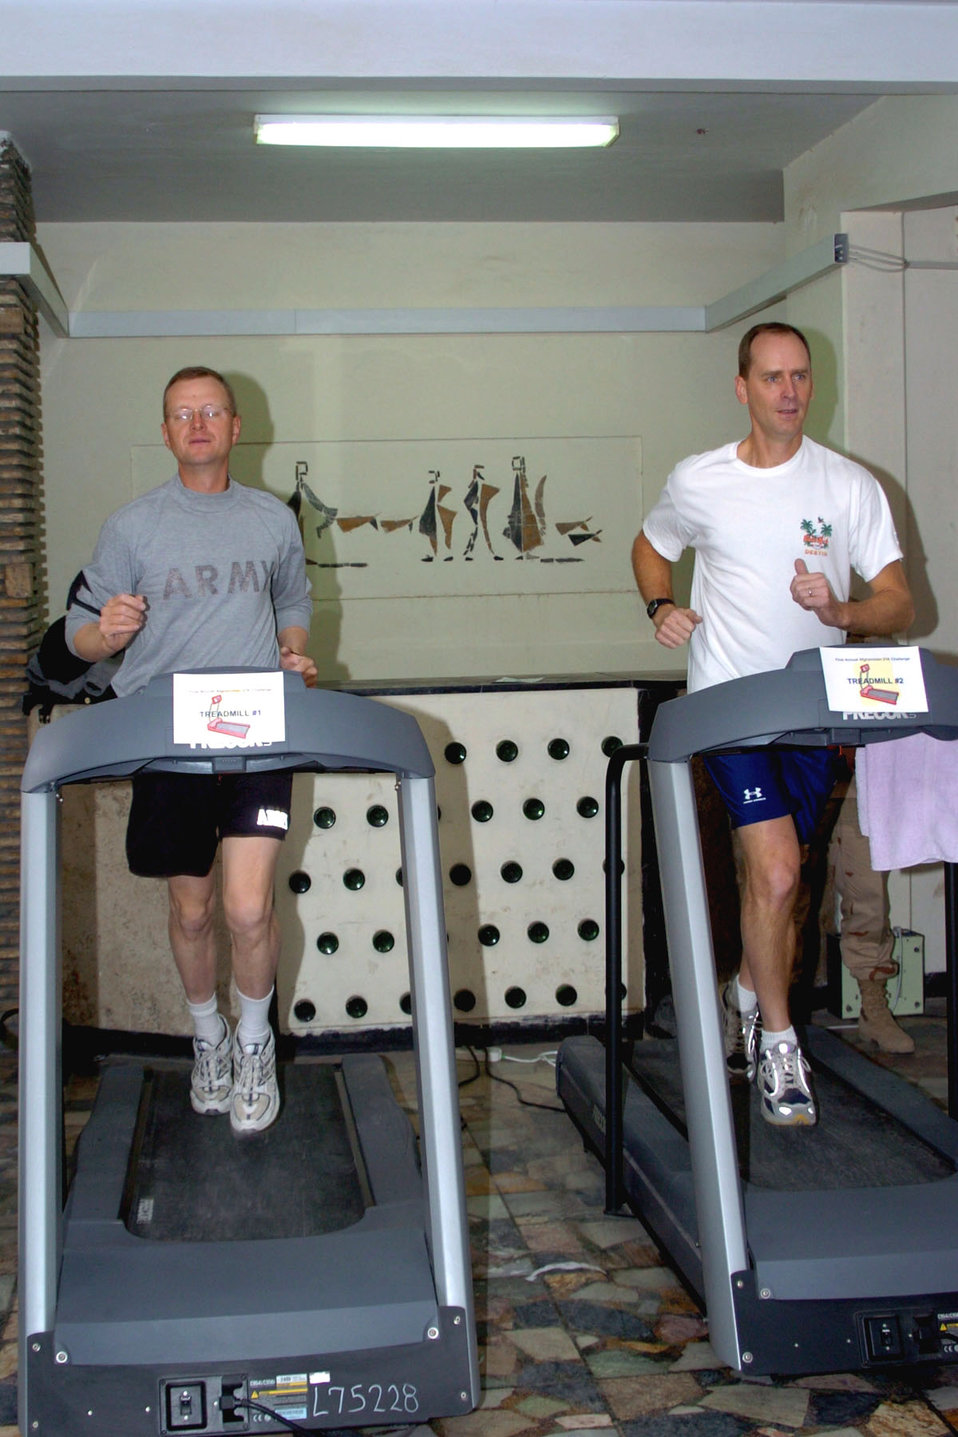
Treadmill half-marathon raises cash

KABUL, Afghanistan -- Army National Guard Capt. Dennis Mankus (left) runs for the joint team, while Col. Kevin Bell races for the Air Force. They were competing in a 13-mile race on treadmills to raise money for Afghan charities. Participants collected about $4,000.